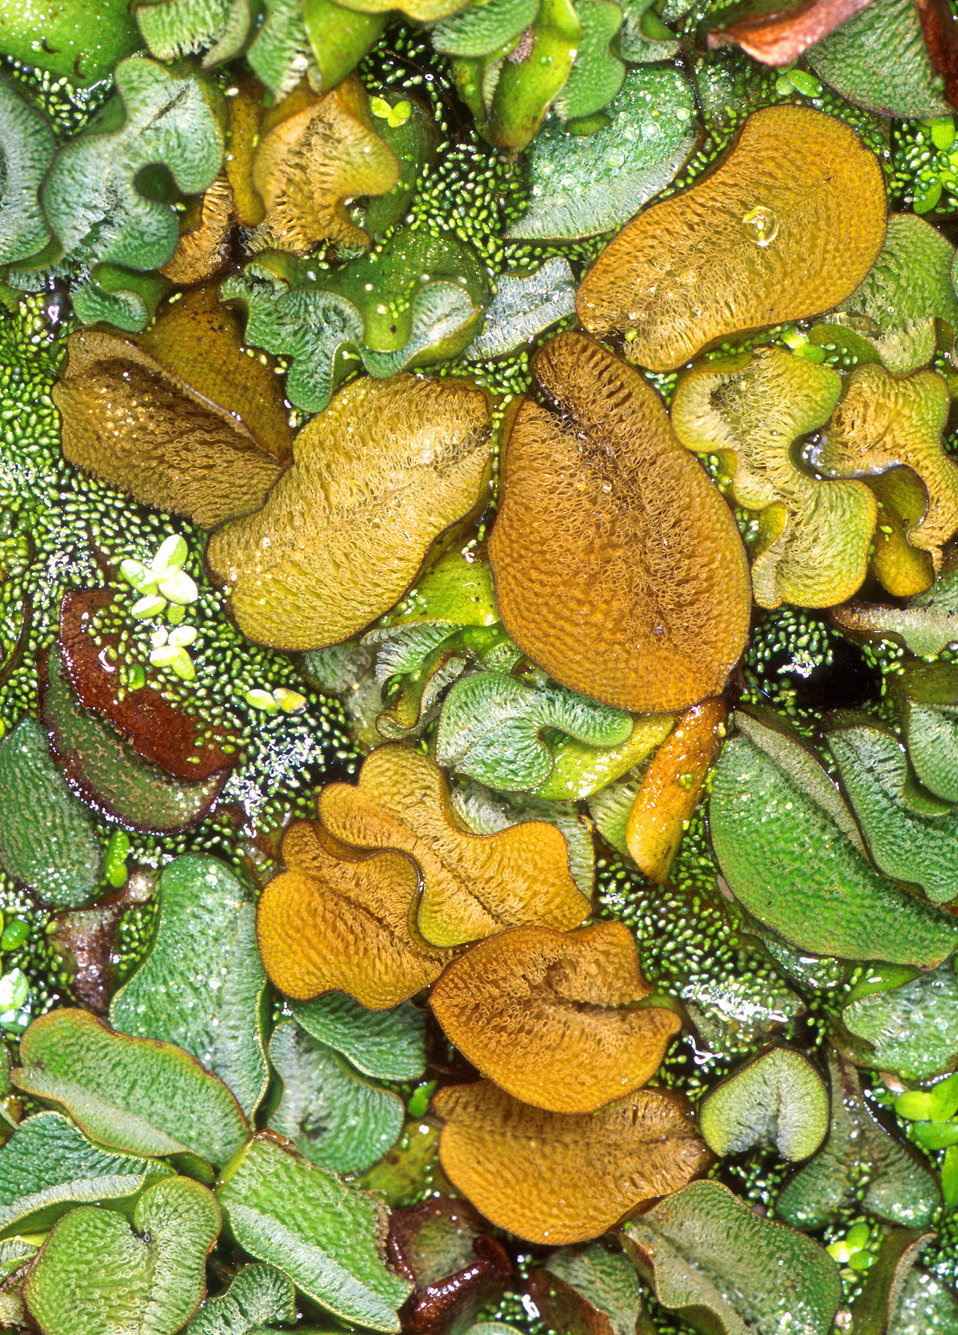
Giant salvinia is a fast-growing fern that can clog ponds and lakes. Forming mats up to 2 feet thick, the plant gobbles up oxygen and blocks sunlight needed by other water dwellers. A tiny weevil, Cyrtobagous salviniae, is under study as a biocontrol for this obnoxious invader.